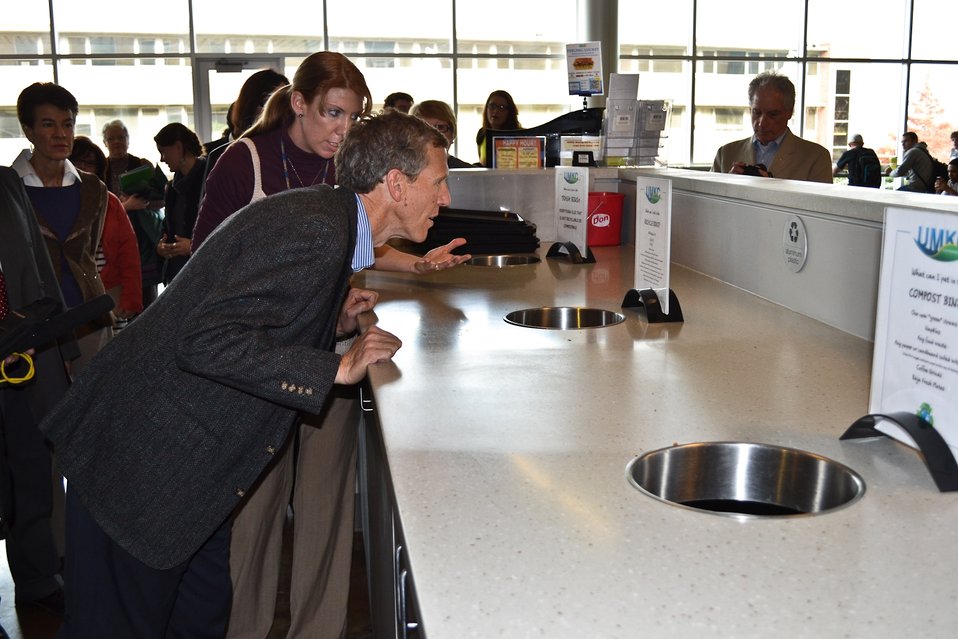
November 15, 2012, A closer look at sorting food waste

Karl Brooks, U.S. EPA Midwest Regional Administrator, checks out the process of sorting food waste at the University of Missouri- Kansas City with Melissa Barton of UMKC.

Brooks applauded the University’s participation, joining over 60 colleges and universities pledging to feed people, not landfills, as part of EPA's Food Recovery Challenge.

Organizations can commit to reducing the amount of food sent to landfills through prevention, donation and composting. The Challenge guides organizations toward leaner purchasing practices, diverts surplus food to hunger-relief organizations and suitable food scraps, to composting or animal feed.

EPA's Food Recovery Challenge